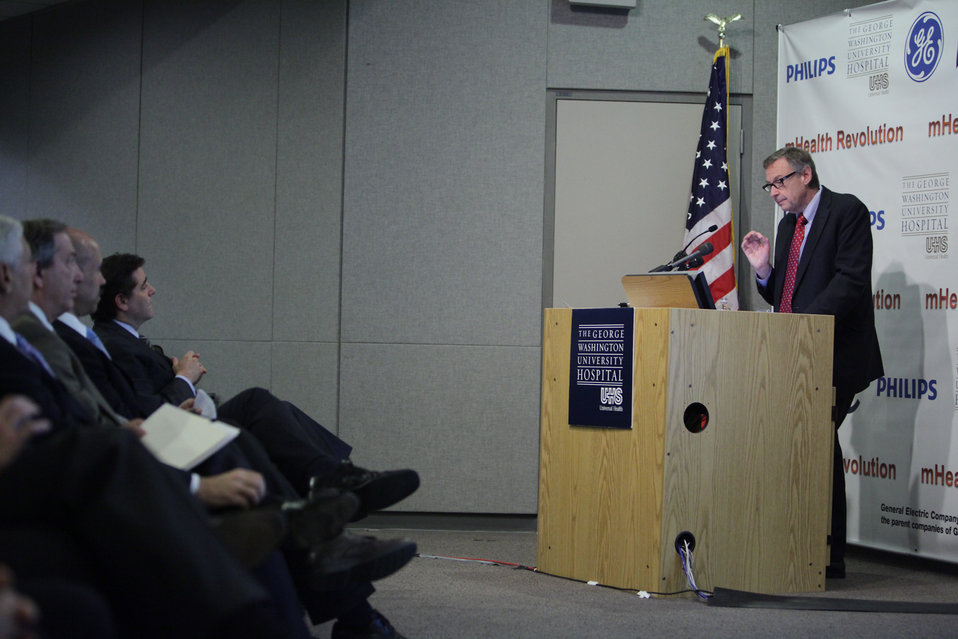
Mike Harsh Speaks at GW University Hospital About MBANs

Mike Harsh, Vice President & Chief Technology Officer, GE Healthcare speaks at George Washington University Hospital in Washington, DC.

May 17, 2012.